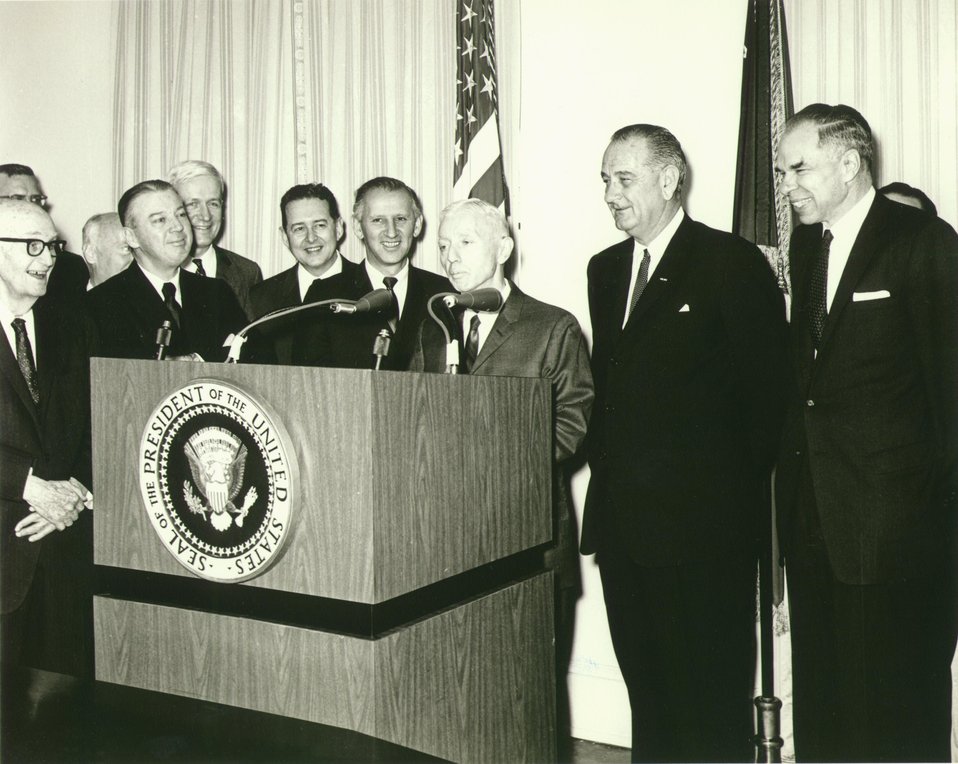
Fermi Award. Recipient: Rickover. Date: 1964.